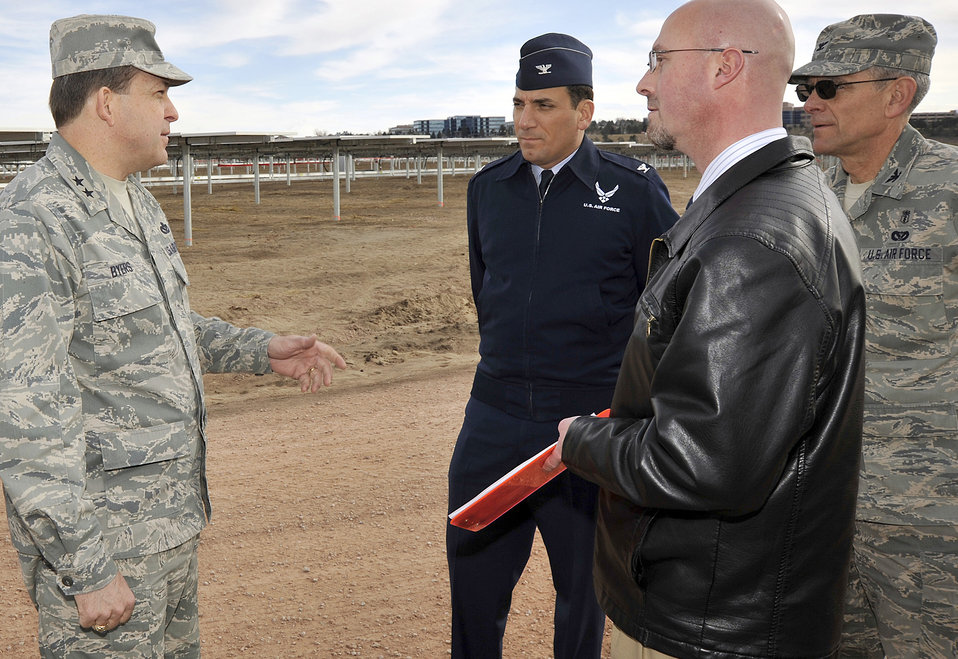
Air Force civil engineer visits Academy

Maj. Gen. Timothy Byers speaks with Col. Rick LoCastro, Russ Hume and Col. Gregory Seely during a visit to the U.S. Air Force Academy's solar array March 4, 2011, at Colorado Springs, Colo. The array is scheduled to generate its first megawatt of power in March and ramp up to its full 6MW capacity by the end of April. General Byers is the Air Force Civil Engineer and graduate of the University of Kentucky. Colonel LoCastro is the Academy's 10th Air Base Wing commander. Colonel Seely is the director of Installation and Mission Support, and Mr. Hume is an engineer with the A7 directorate.